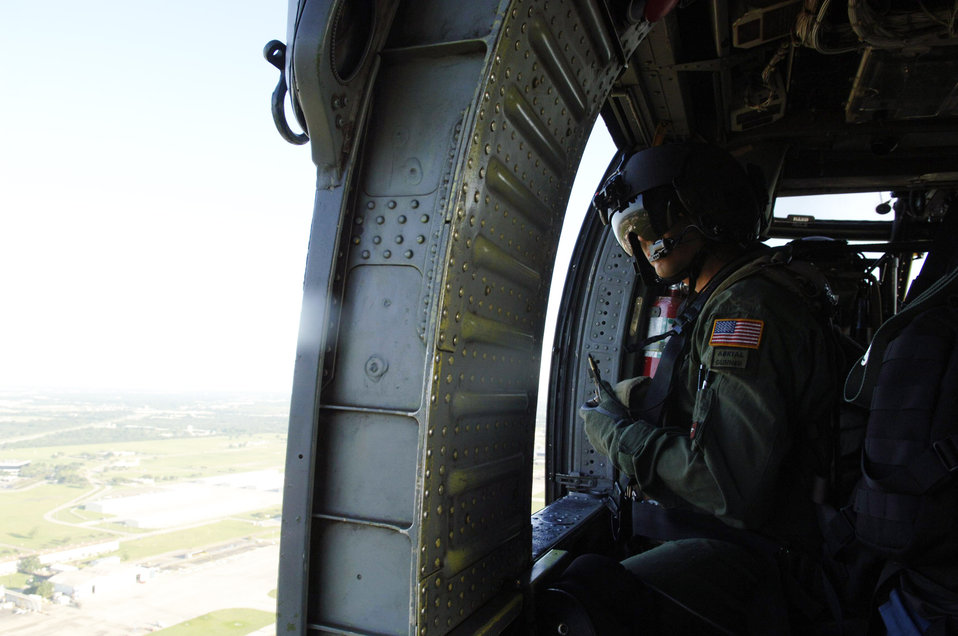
Rescue squadrons provide support for Hurricane Gustav

Staff Sgt. Andy Pena performs in-flight calibrations on a HH-60 Pave Hawk while flying Sept. 3 over Ellington Field, Texas. He and members of the 55th Rescue Squadron deployed from Davis-Mothan Air Force Base, Ariz., to Ellington Field in response to Hurricane Gustav with less than 24 hours after notification. Sergeant Pena is an aerial gunner.